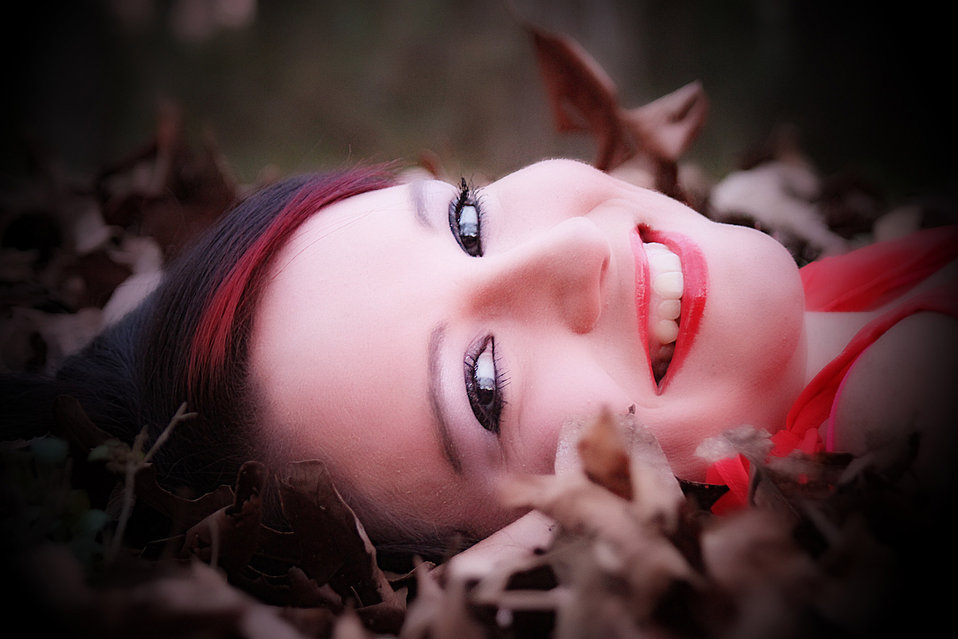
Hanna

Girl lying dwon.